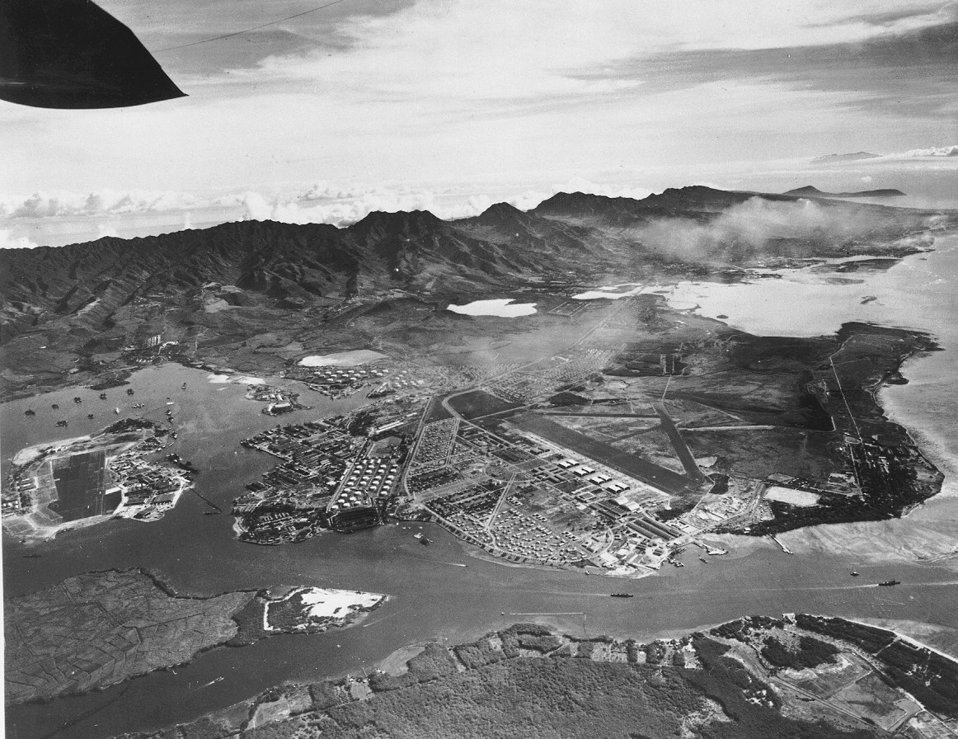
Pearl aerial-view

Pearl Harbor, Hawaii, as it looked in October, 1941.